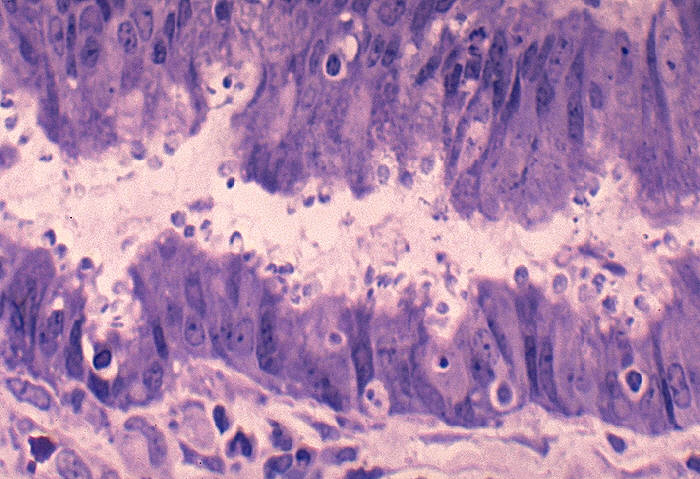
Histopathology of cryptosporidiosis, intestine.